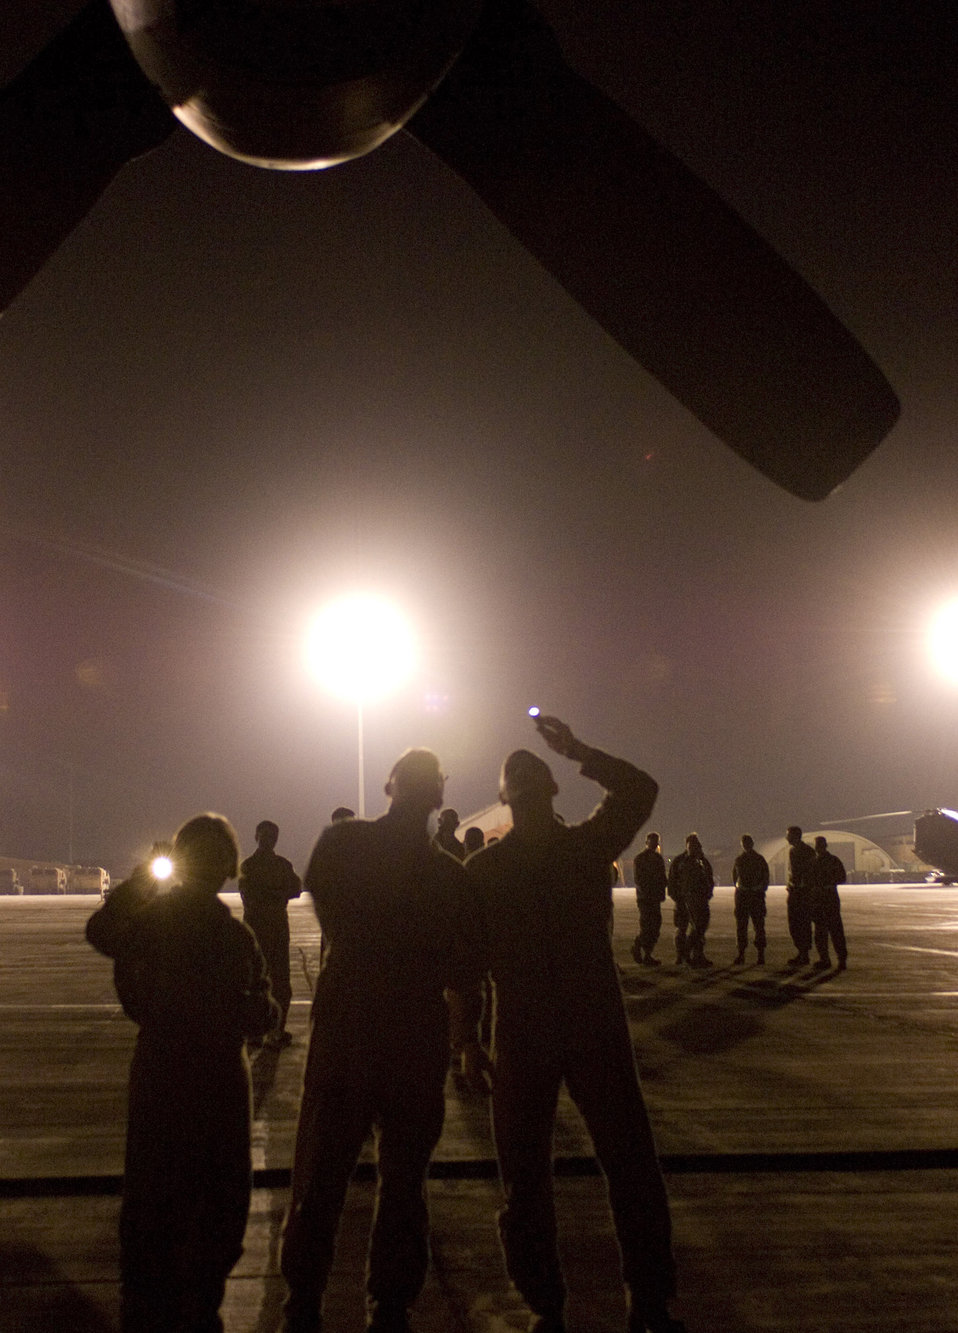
EC-130 squadron surpasses 10,000 combat hours

Aircrew members perform a preflight inspection on an EC-130H Compass Call while maintainers wait in the background to help launch the aircraft Oct. 6 at Bagram Airfield, Afghanistan. Members of the 41st Expeditionary Electronic Combat Squadron recently surpassed 10,000 combat hours in support of Operation Enduring Freedom.